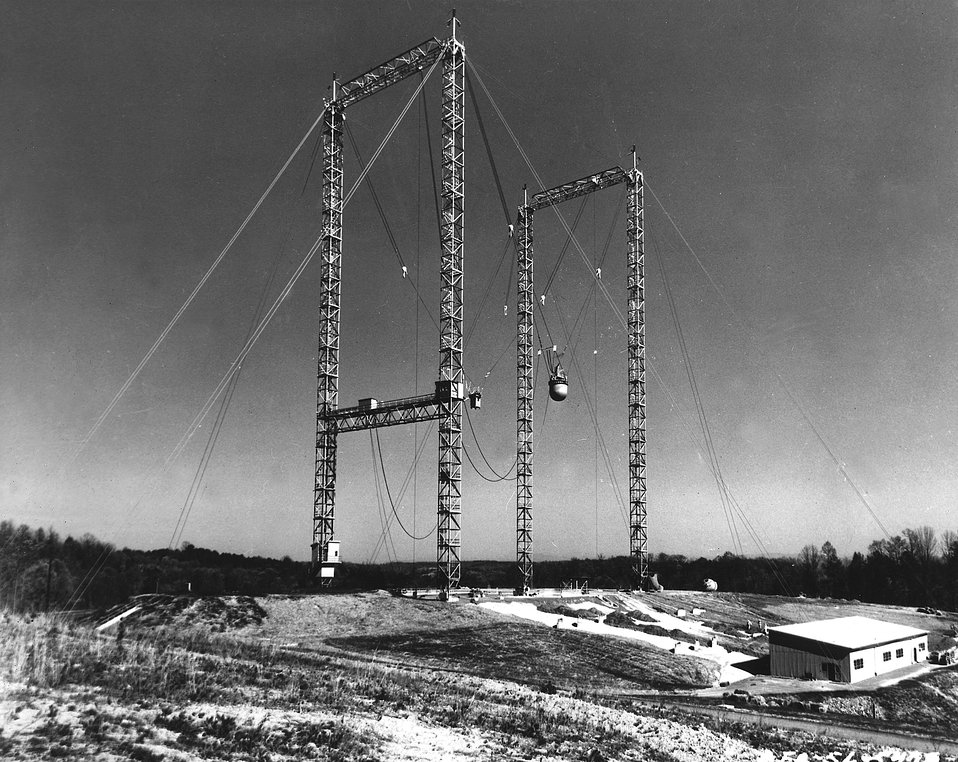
The Tower Shielding Facility at Oak Ridge is one of the most versatile instruments for reactor technology for research -- not only for its aerial dexterity but as a means for securing shielding data that may establish the nuclear reactor as an economical prime mover of the future. c. 1956